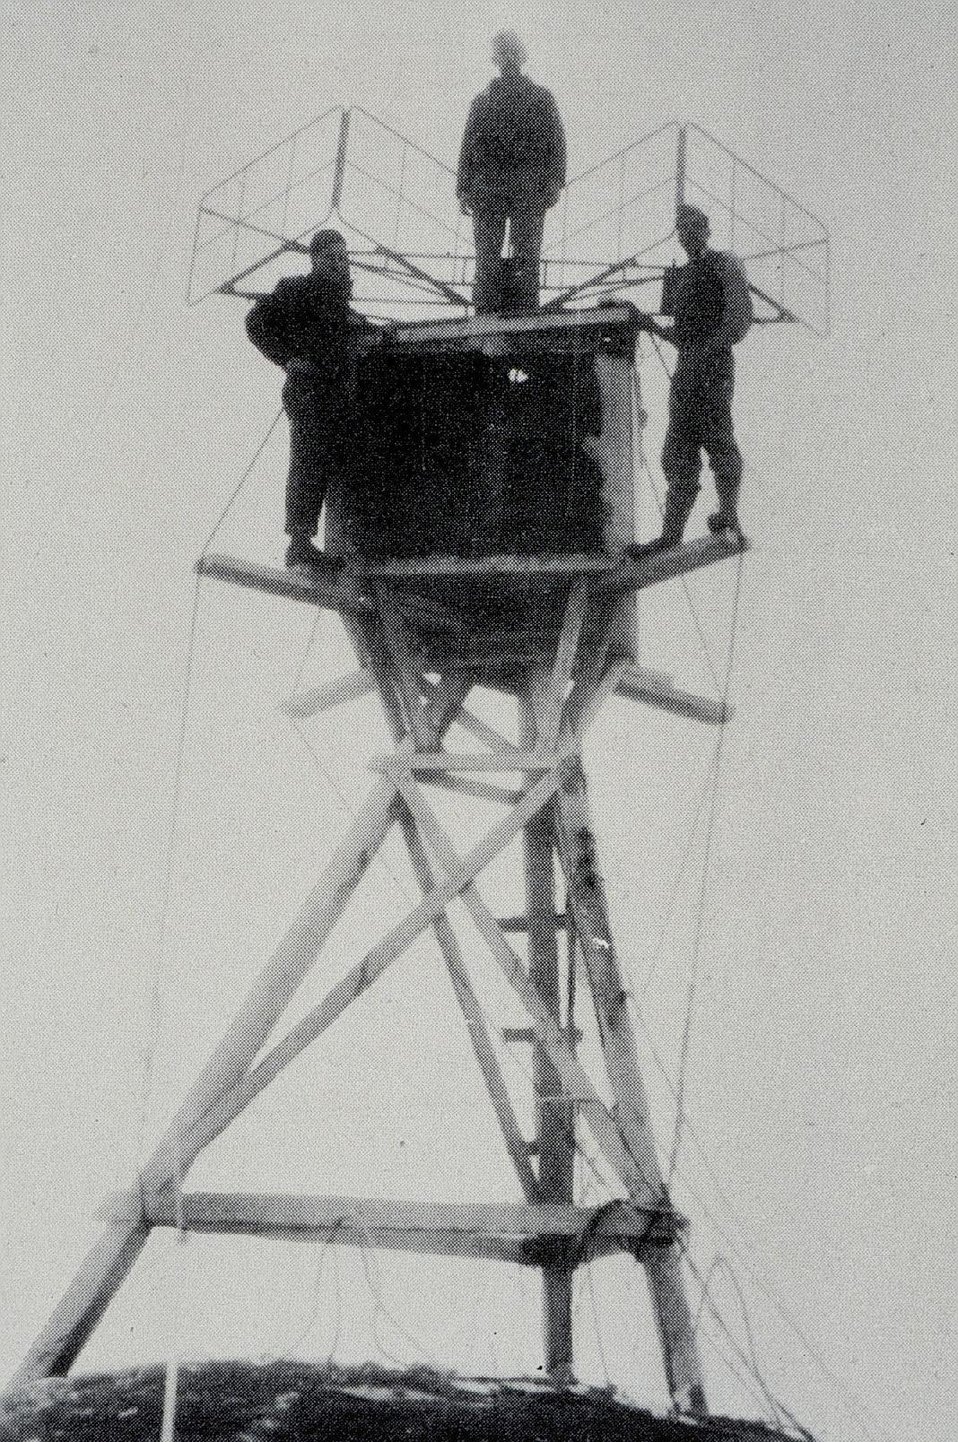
Shoran antenna at Cape Wrangell. Party off of SURVEYOR